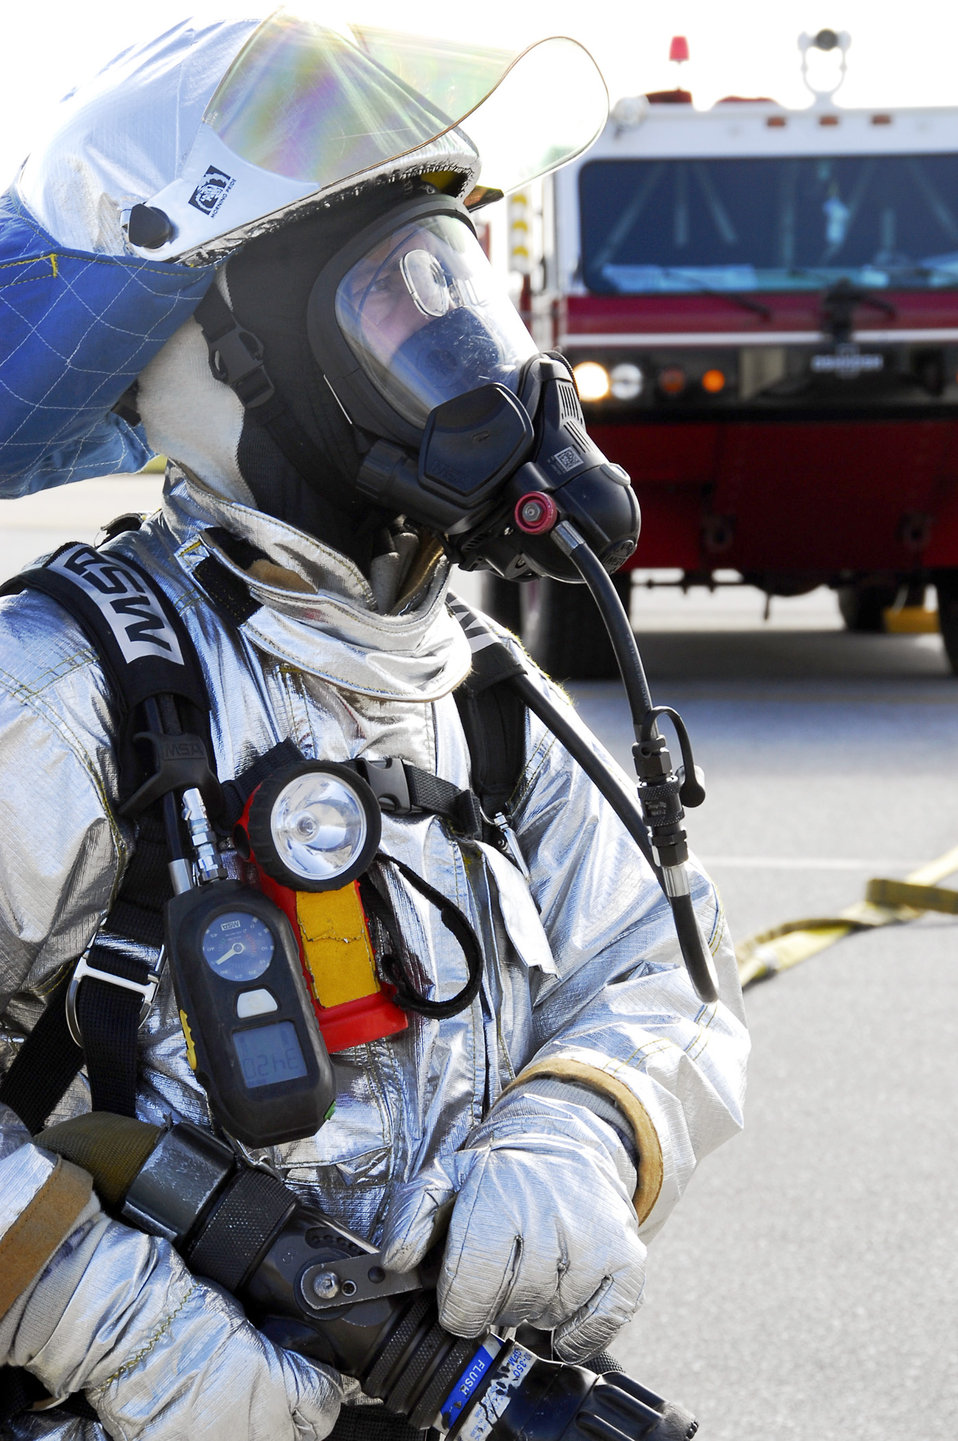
Kadena exercise

A firefighter from the 18th Civil Engineer Squadron stands ready with a fire hose for a simulated-burning-aircraft scenario during Beverly High 11-02, a Local Operational Readiness Exercise Jan. 19, 2011, at Kadena Air Base, Japan. The scenario tested the skills and capabilities of Kadena AB's emergency-response professionals.